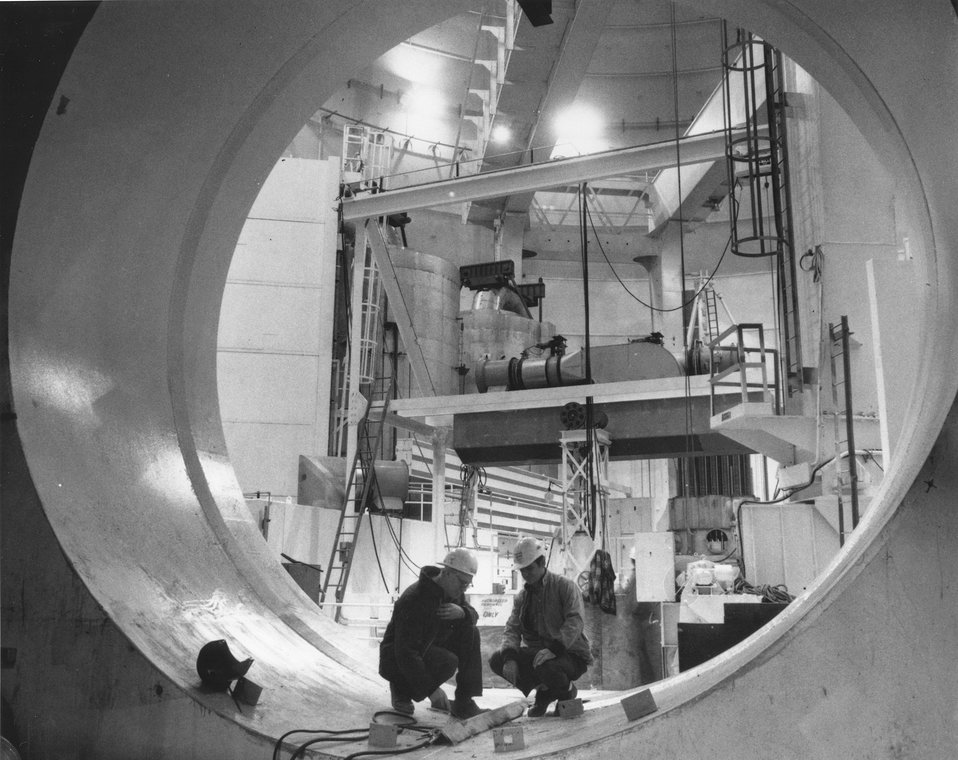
Workmen prepare to close construction hatch in the five-foot thick wall of the Unit 2 reactor containment building at Commonwealth Edison's Zion nuclear generating station. c. 1974